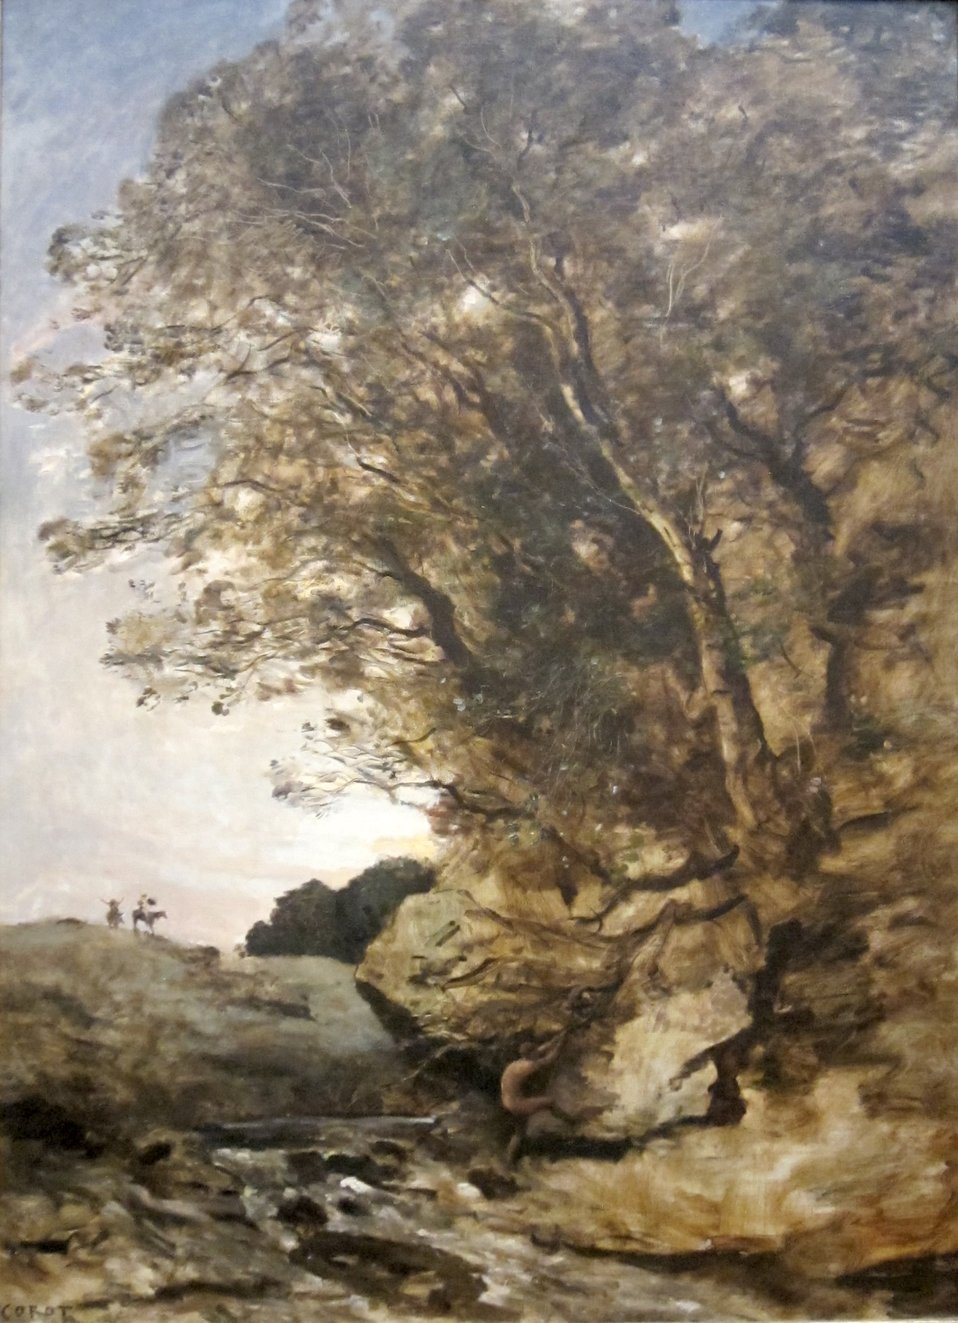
'Don Quixote' by Corot, Cincinnati Art Museum